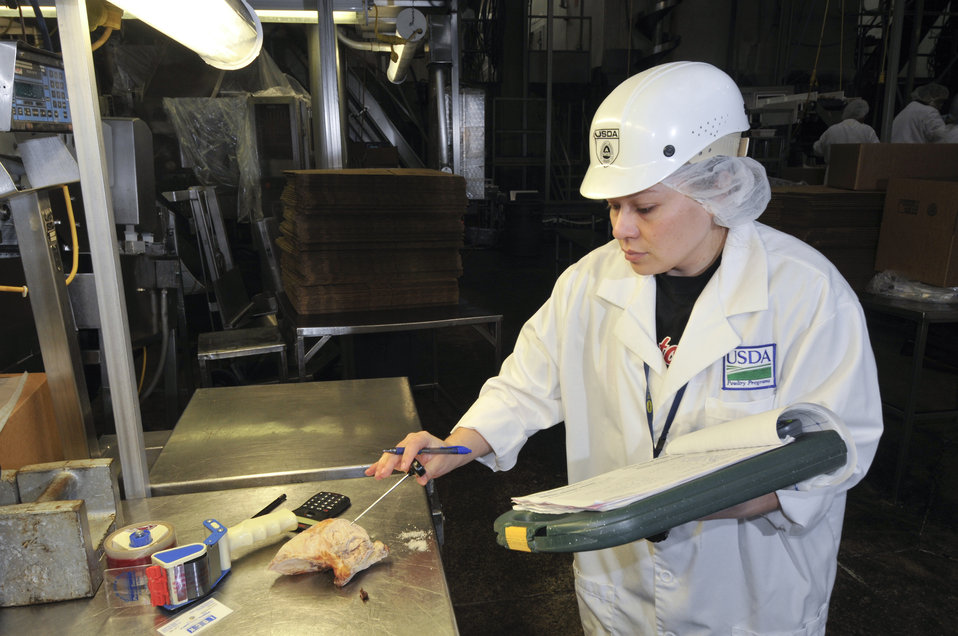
U.S. Department of Agriculture (USDA) Agricultural Marketing Service (AMS) Poultry Grader Guillermina Aguilar performs an Acceptable Quality Level (AQL) Check, Package Defect (P/D) Check, net weight of boxes, measures frozen temperatures and counts pieces per box of frozen chicken breasts in a Tyson Foods poultry processing plant in Berryville, Arkansas on March 25, 2010. Chickens, turkeys, ducks, geese, guineas, and pigeons are all eligible for grading and certification services provided by the USDA AMS Poultry Programs’ Grading Branch. These services are provided in accordance with Federal poultry grading regulations.